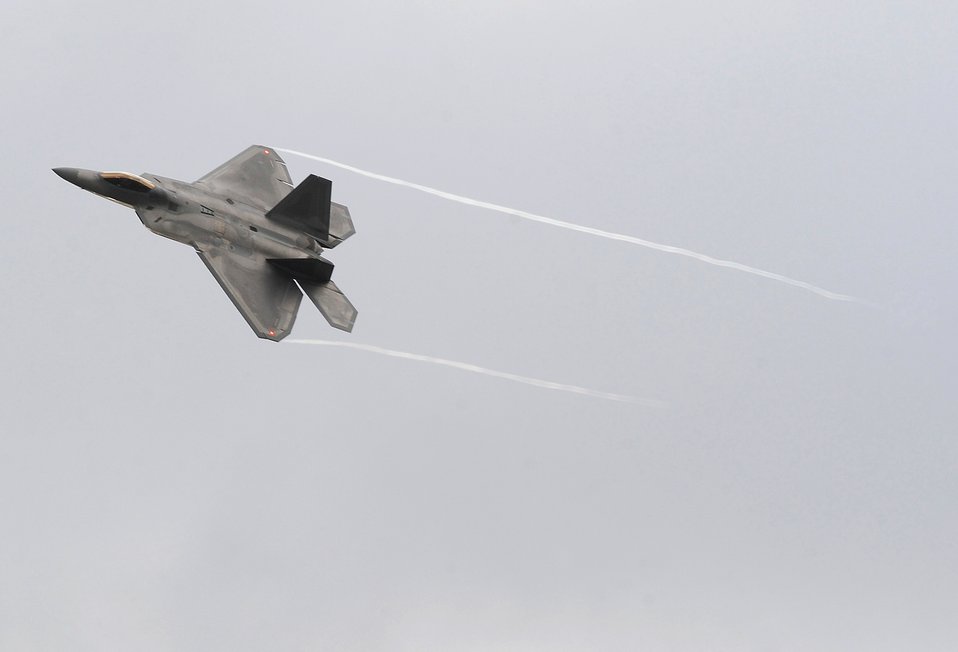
Return to flight

An F-22 Raptor flies over Joint Base Elmendorf-Richardson, Alaska, Sept. 21, 2011, after a four month stand down. Air Force senior leaders recently approved an implementation plan that will allow the F-22 to resume flight operations. The stand down of the fleet was directed May 3, 2011, as a safety precaution following 12 separate reported incidents of pilots experiencing hypoxia-like symptoms.